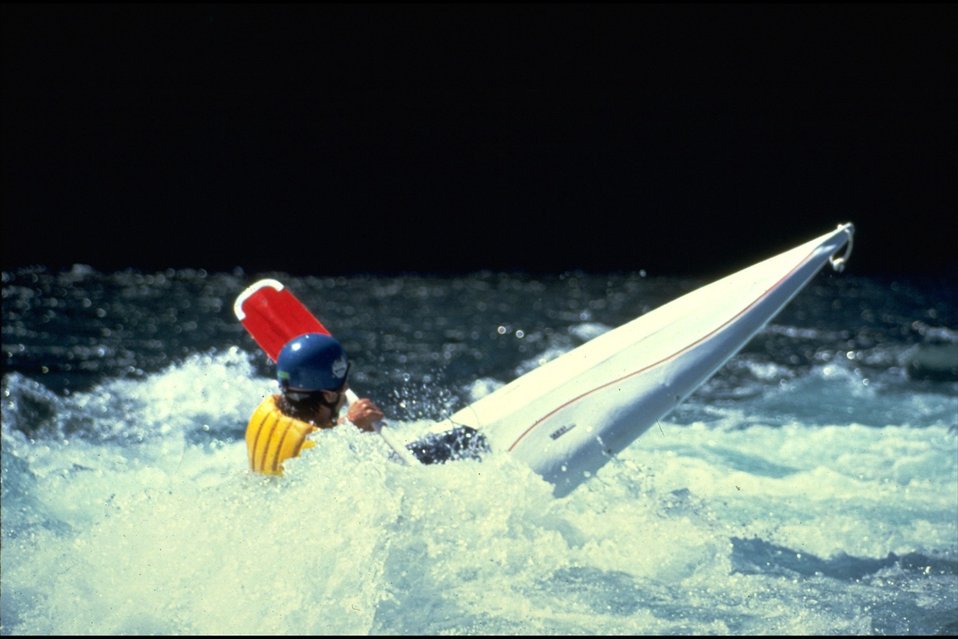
Rogue River - Kayak.